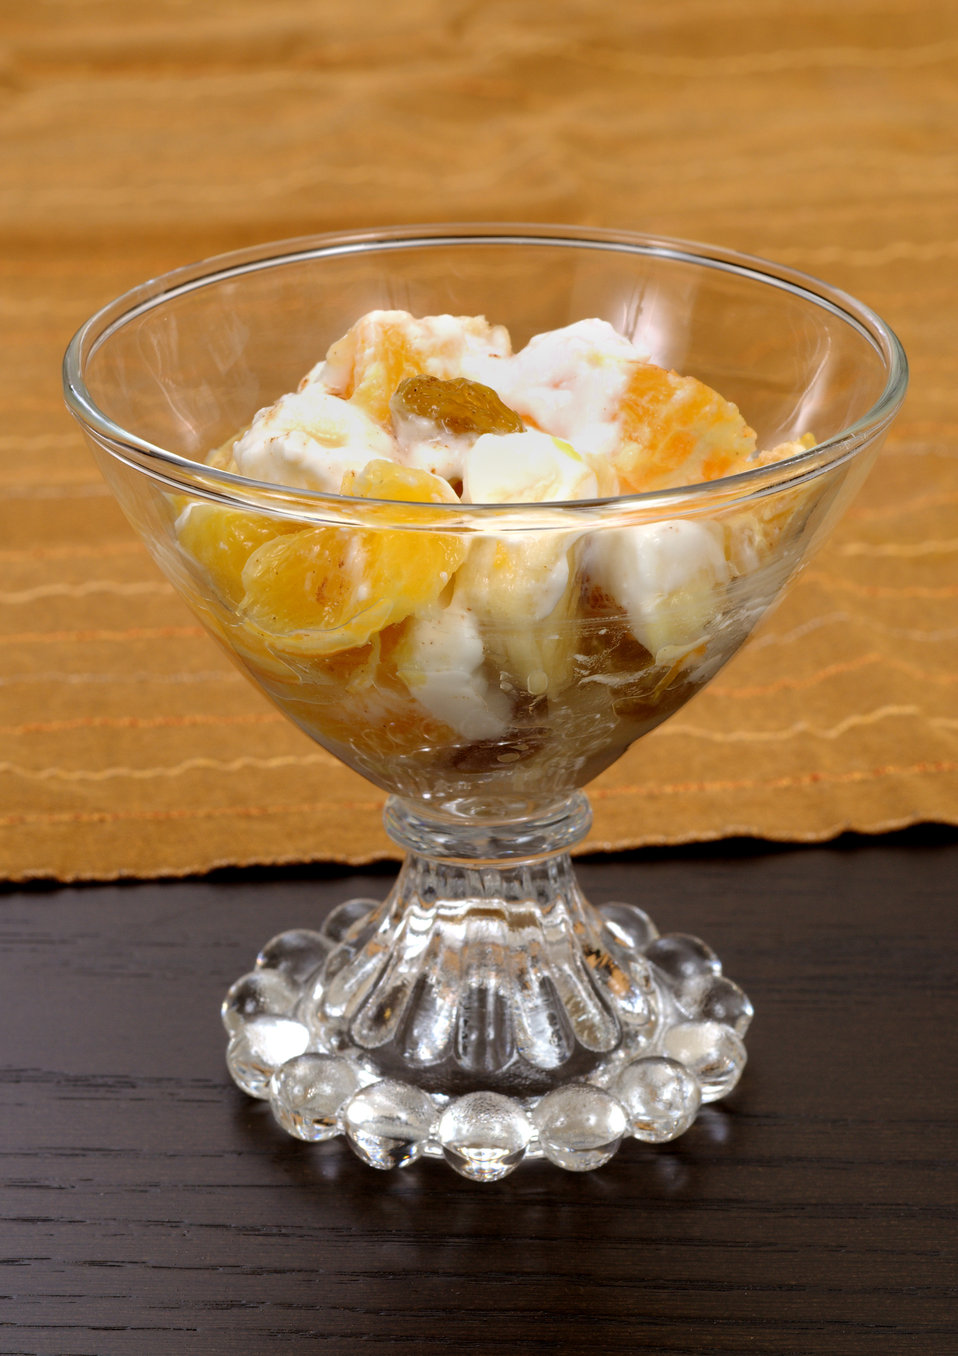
This parfait cup contains a light, highly-nutritious dessert, and can also double for a healthy snack as well. Nutrient-dense, this low-fat food contains fresh fruit and nuts, which are nutrient-dense foods, including orange, pineapple, raisins, and pecans, and makes for a better choice than snacks high in calorie-rich fats, and processed sugars.